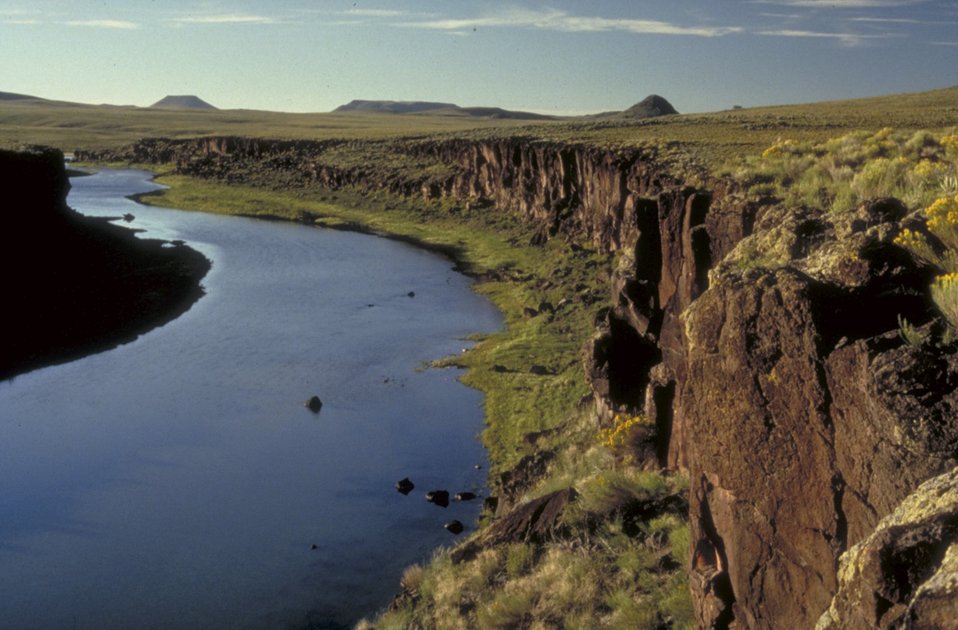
Little Box on the Rio Grande.